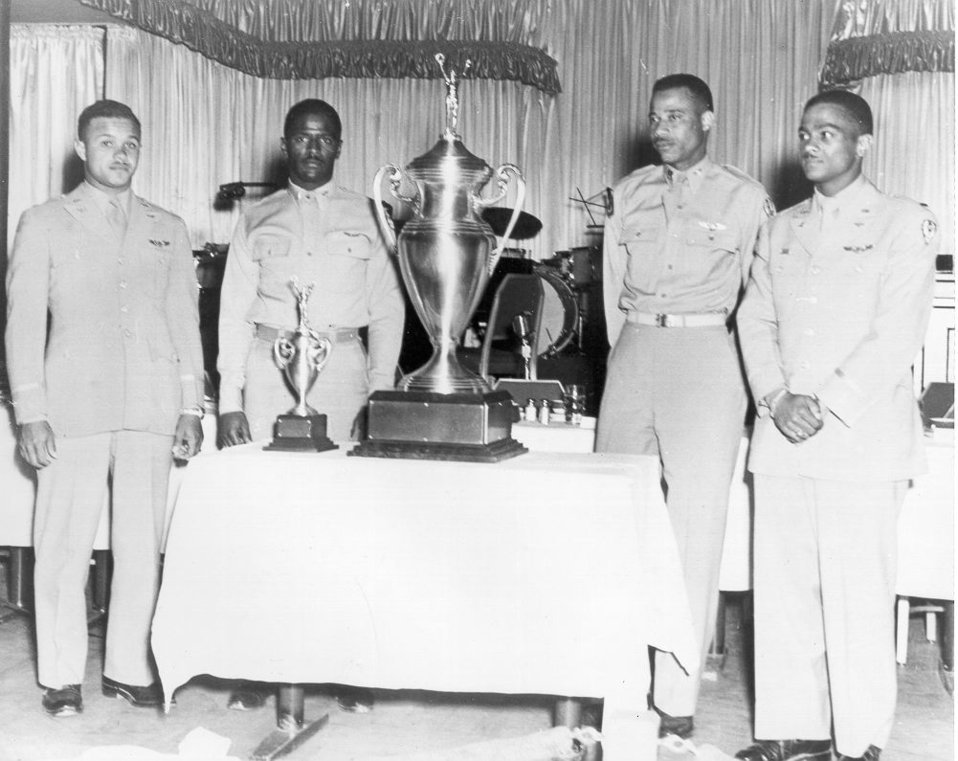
Lt. Col. James Harvey, won early weapons competition as Tuskegee Airman.